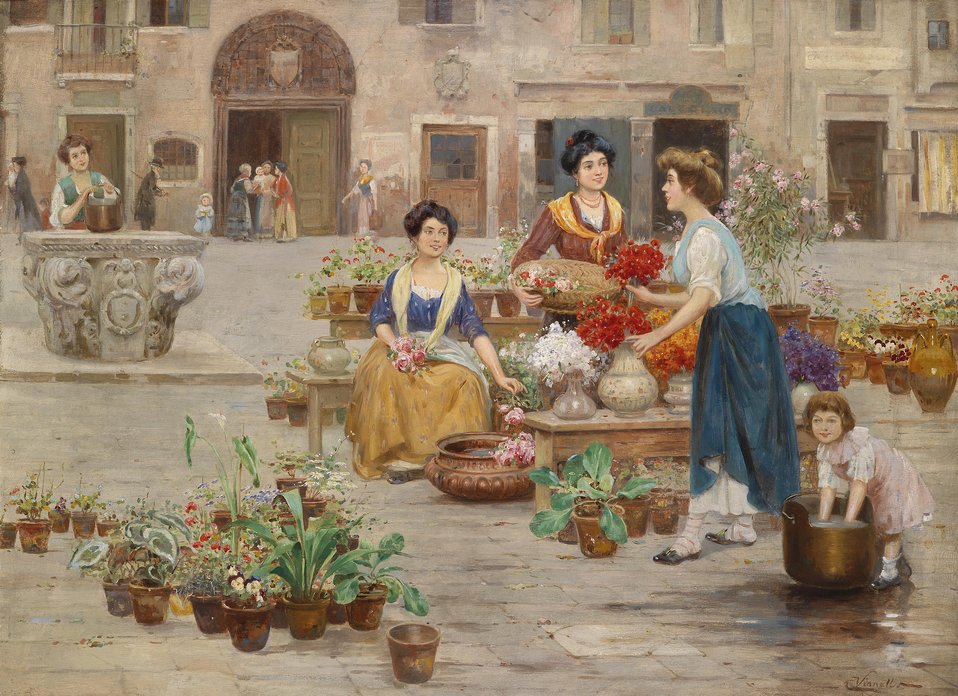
Deutsch: Blumenmarkt, signiert C. Vianello, Italien um 1900, Öl auf Leinwand, 63 x 83 cm